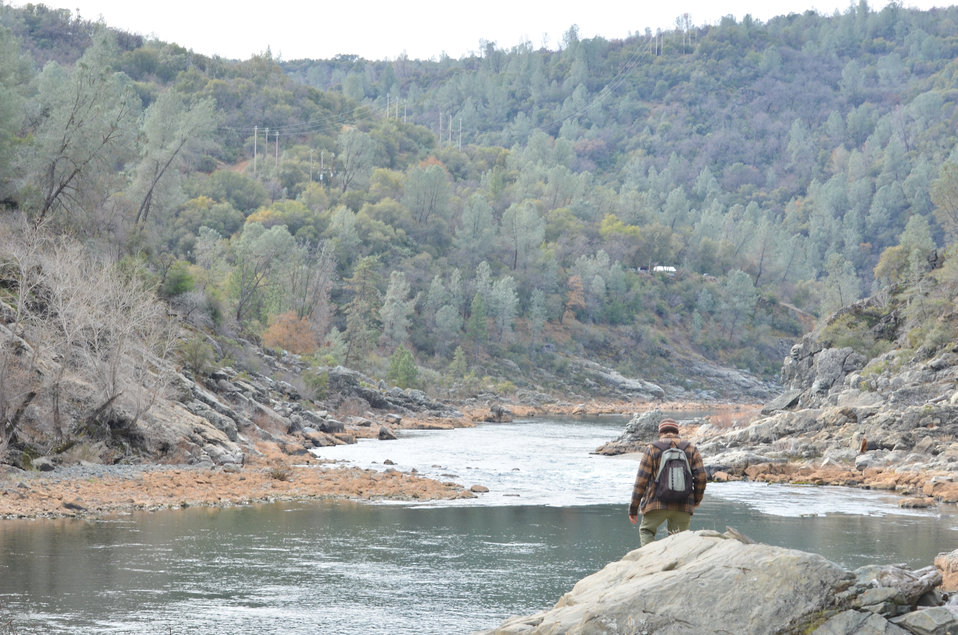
Building a 3-D model of Yuba River canyon

Bobby Gonzalez, a field assistant at the University of California-Davis, photographs the Yuba River canyon below Englebright Dam near Smartsville, Calif., Jan. 6, 2012. Researchers at the University of California-Davis will use the images to create a virtual 3-D model of the river canyon to aid future research. Under the direction of the National Marine Fisheries Service, the U.S. Army Corps of Engineers Sacramento District, which owns and manages the dam, has placed more than 5,000 tons of gravel in the river to improve spawning habitat for the threatened Chinook salmon and steelhead trout species. Dr. Greg Pasternack, professor of land, air and water resources at UC-Davis, designed the gravel injection project and is evaluating the gravel’s movement through the river course.